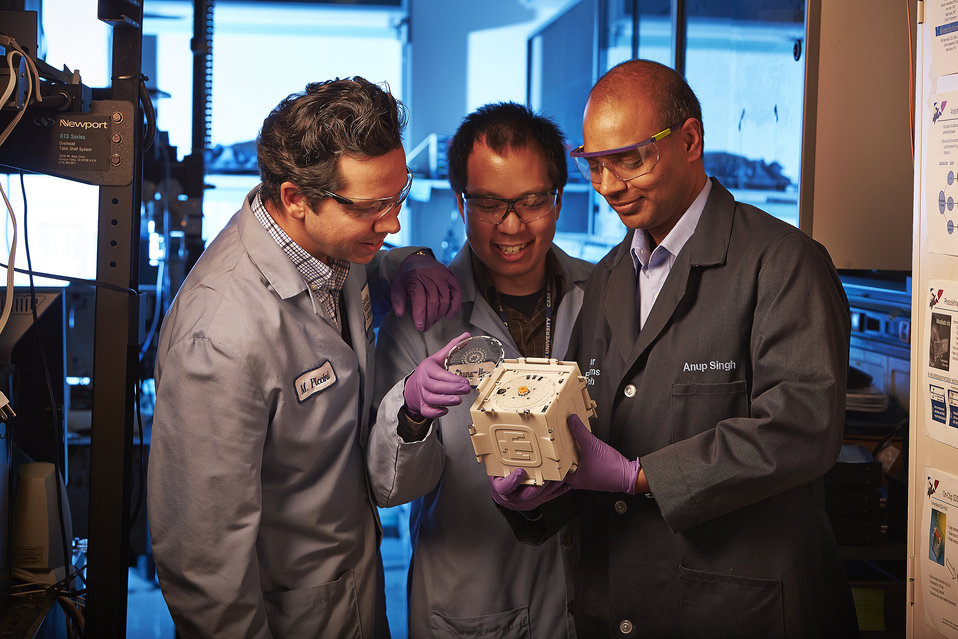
Sandia National Laboratories lead the SpinDx team.

A new National Institutes of Health-funded project will take the device to a new level and is expected to result in an instrument that can detect a suite of biothreat agents.